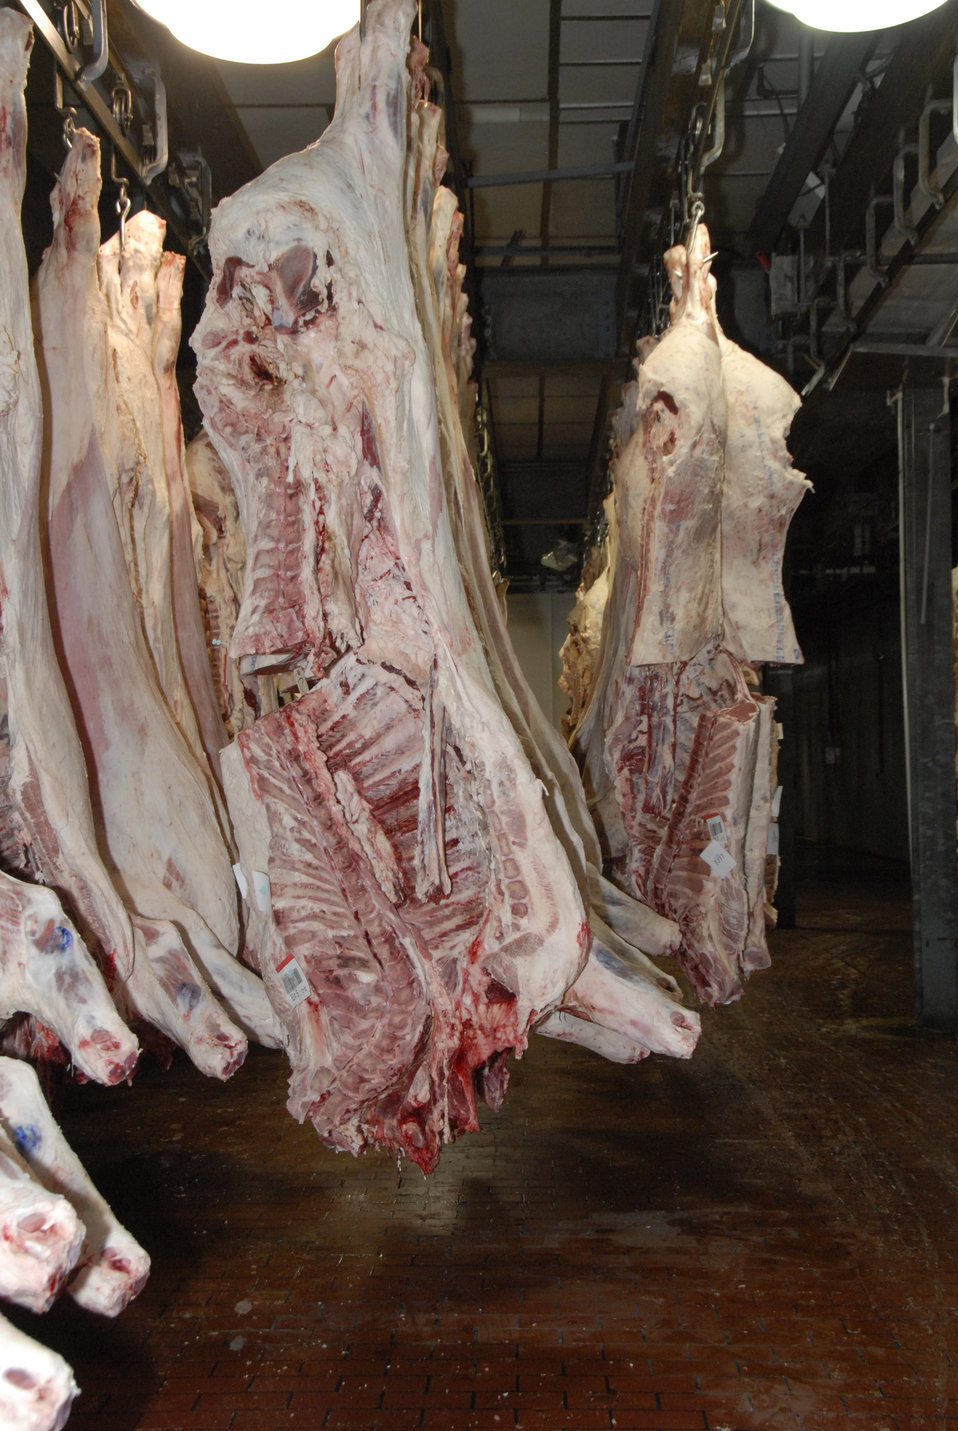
Sides of beef at the Sam Kane beef slaughterhouse in Corpus Christi, Texas on June 10, 2008 are stored in a refrigerated room. U.S. Department of Agriculture (USDA) Food Safety and Inspection Service (FSIS) inspectors examine the beef to ensure that it is safe for consumption.